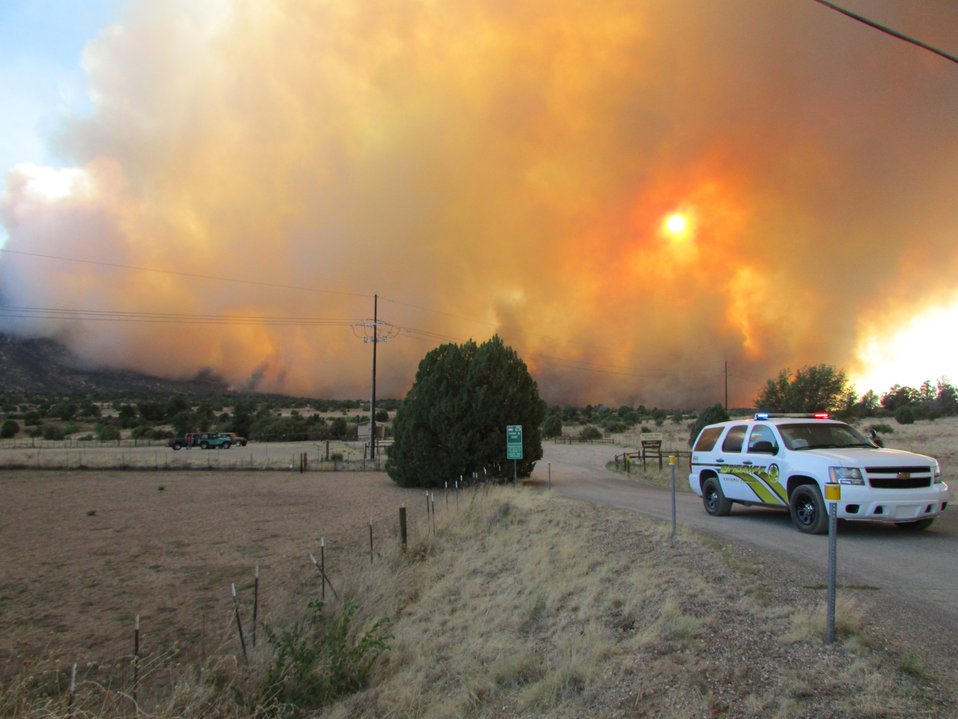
The Doce Fire (pronounced 'Dough-see') is located approximately 8 miles northwest of Prescott, AZ near Granite Mountain Recreation Area began on Jun. 18, 2013 by human interference. The fire has consumed approximately 6, 732 acres.